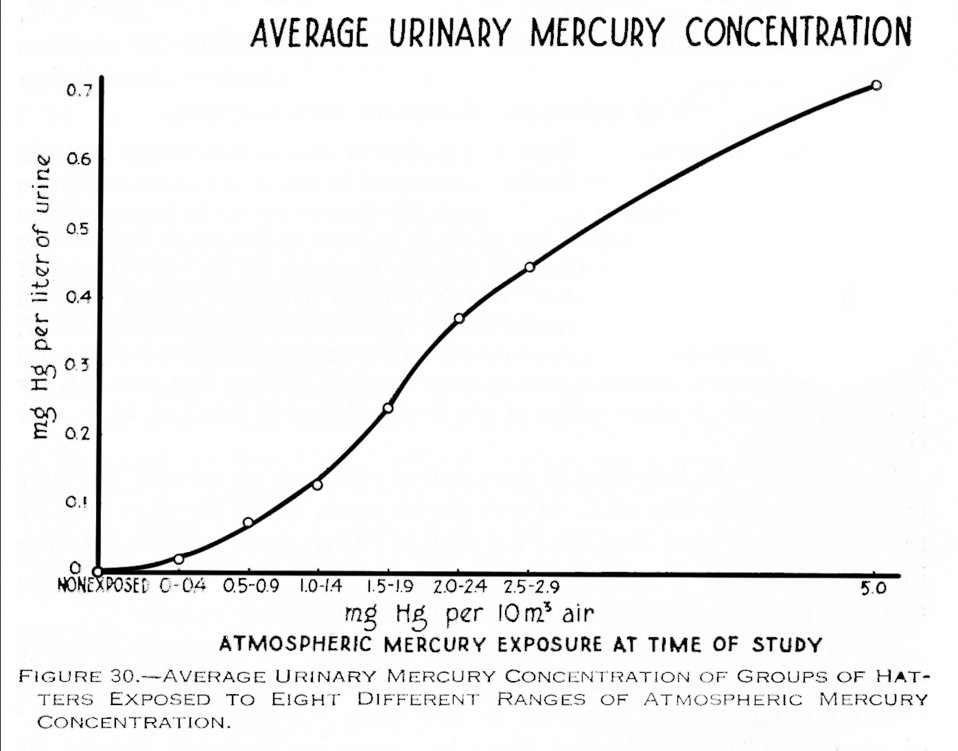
This historical image was provided by the Center for Disease Control's (CDC), National Institute for Occupational Safety and Health (NIOSH). Depicted, was a page from a written medical questionnaire, recorded during a history and physical examination of a fur cutter, who'd been exposed to mercury in a hat manufacturing plant. The graph illustrated the concentration of atmospheric mercury inside eight different work environments, and compared it to the mercury concentration in each of the eight workers' urine samples. Fur processing involves the use of mercury in the form of mercury nitrate, which renders the fur suitable for manufacturing hats. If precautions were not taken, such as wearing a filtered breathing mask, or gloves, mercury exposure was quite likely, and could have lead to heavy metal poisoning, with severe pathologic neurological consequences. The image was published in the 'Public Health Bulletin', No. 263, Fig. 30, 1941.